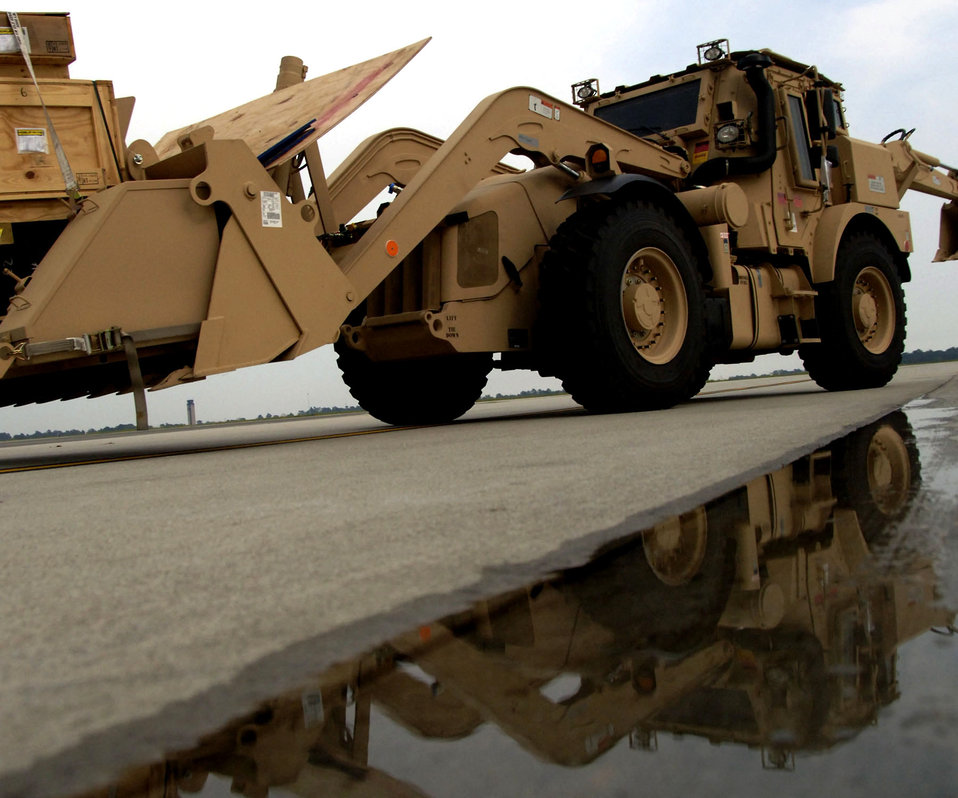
Charleston Airmen begin transporting new Army vehicles

An Army High Mobility Engineer Excavator is moved into position prior to being loaded onto a C-5 Galaxy Sept. 29 at Charleston Air Force Base, S.C. The HMEEs will be transported to forward deployed locations to assist Soldiers and contractors in hostile environments.